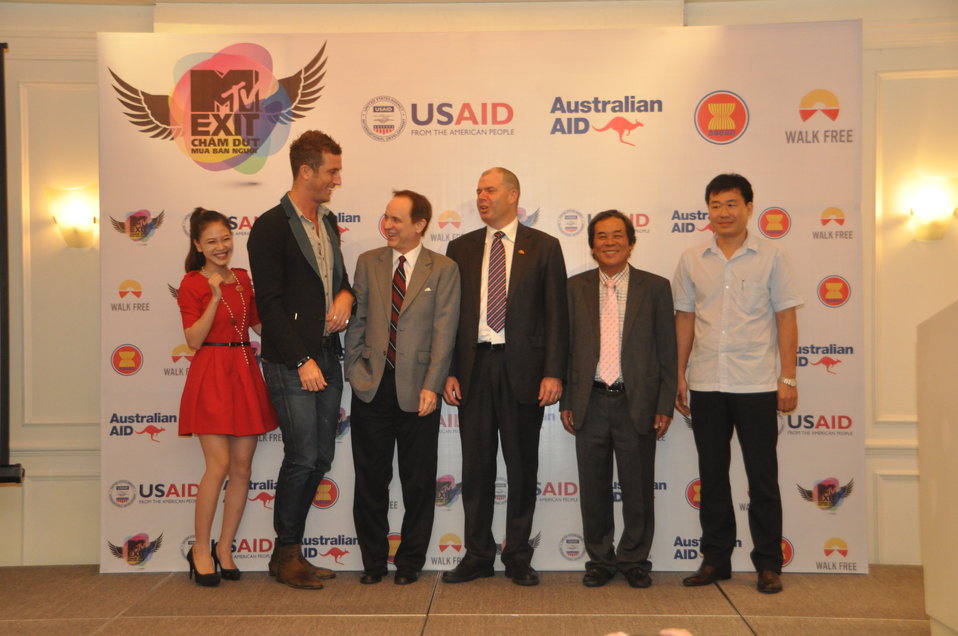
USAID joins MTVExit to launch documentary and awareness campaign against human trafficking